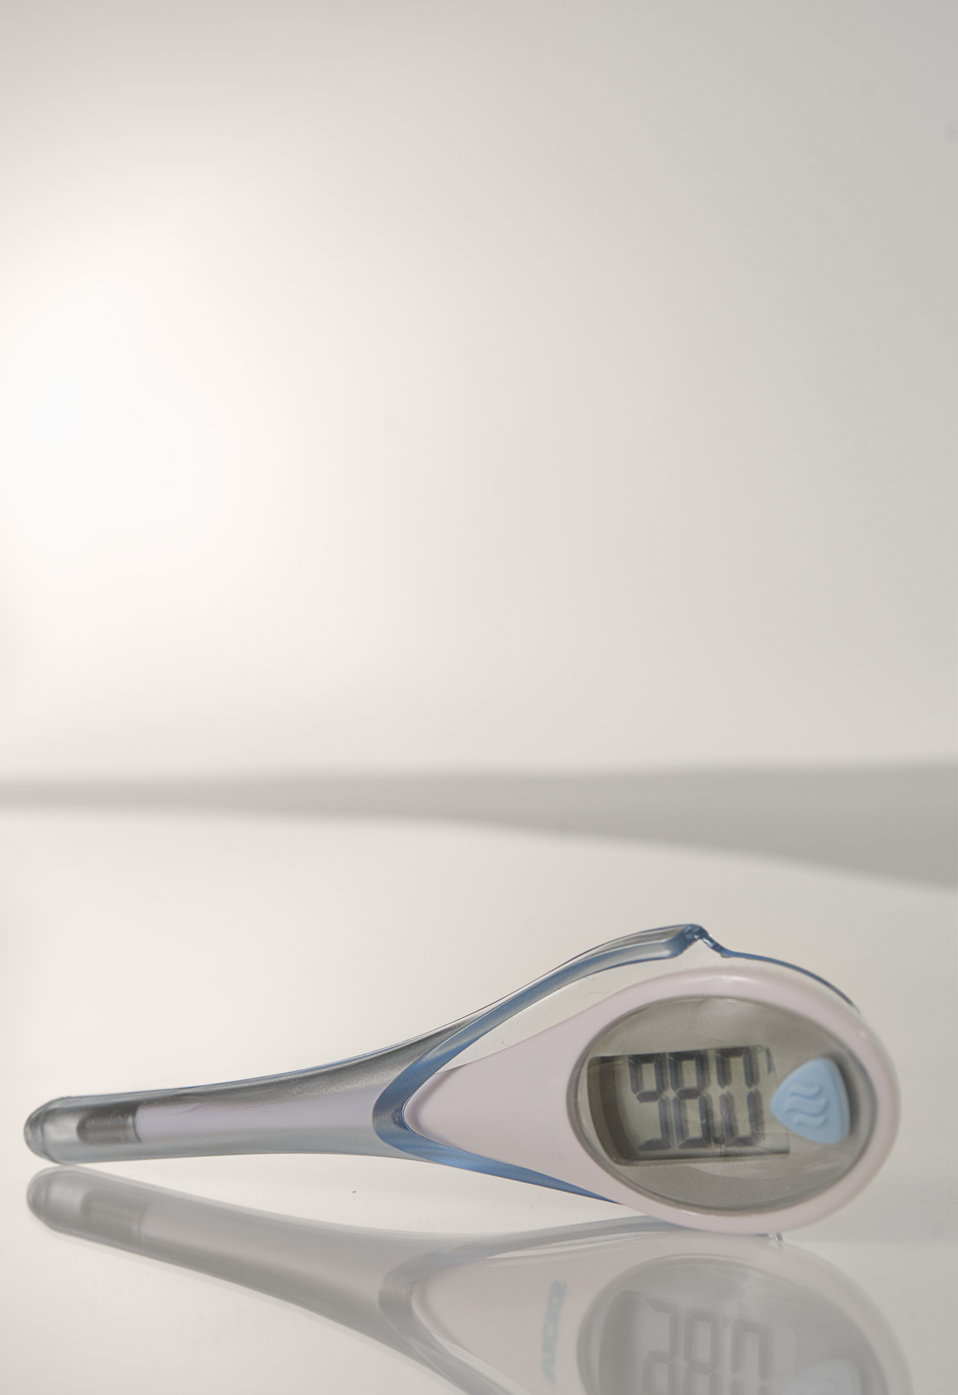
This is a high-tech, orally-administered electronic thermometer revealing its reading on its liquid crystal digital display, which in this case, read 98.0�F. The metallic probe may be placed under the tongue, which will give you an oral temperature.